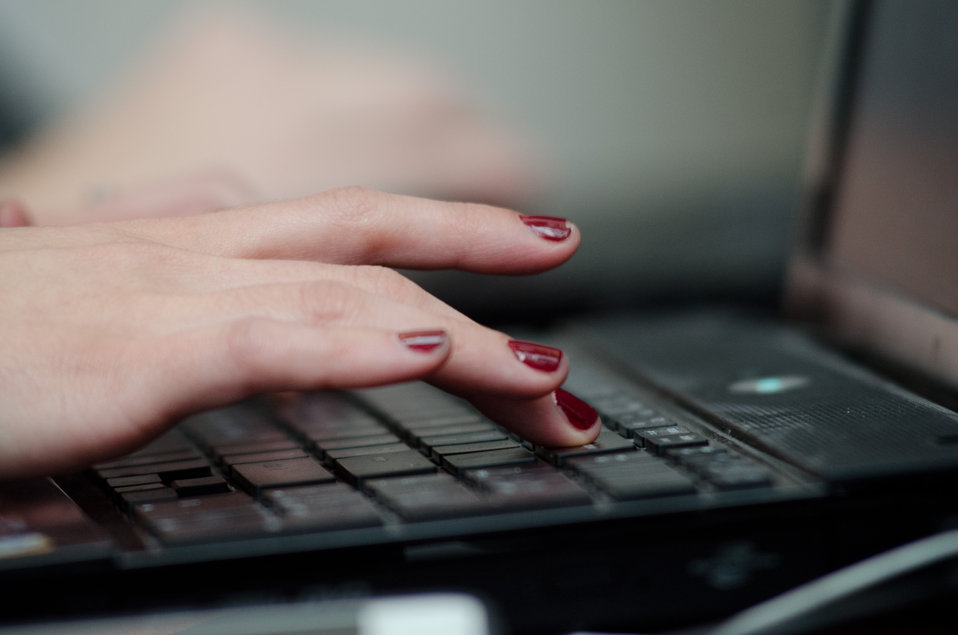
Unlike most events where mobile communication devices are asked to be turned off, Agriculture Deputy Secretary Kathleen Merrigan asked that they remain on allowing people to have access to social media conversations in a continuations the National Conversation on Local and Regional Food projects and how they offer economic opportunities to local farmers, ranchers and food entrepreneurs. using the new web -based Know Your Food Compass, the conversation covered many aspects about food, such as infrastructure, stewardship, local meat and poultry, Healthy food access, careers in agriculture and local food knowledge. The virtual conversation took place at the White House, and Twitter was used to expand the conversation worldwide, from Washington, D.C., on Monday, March 5, 2012.